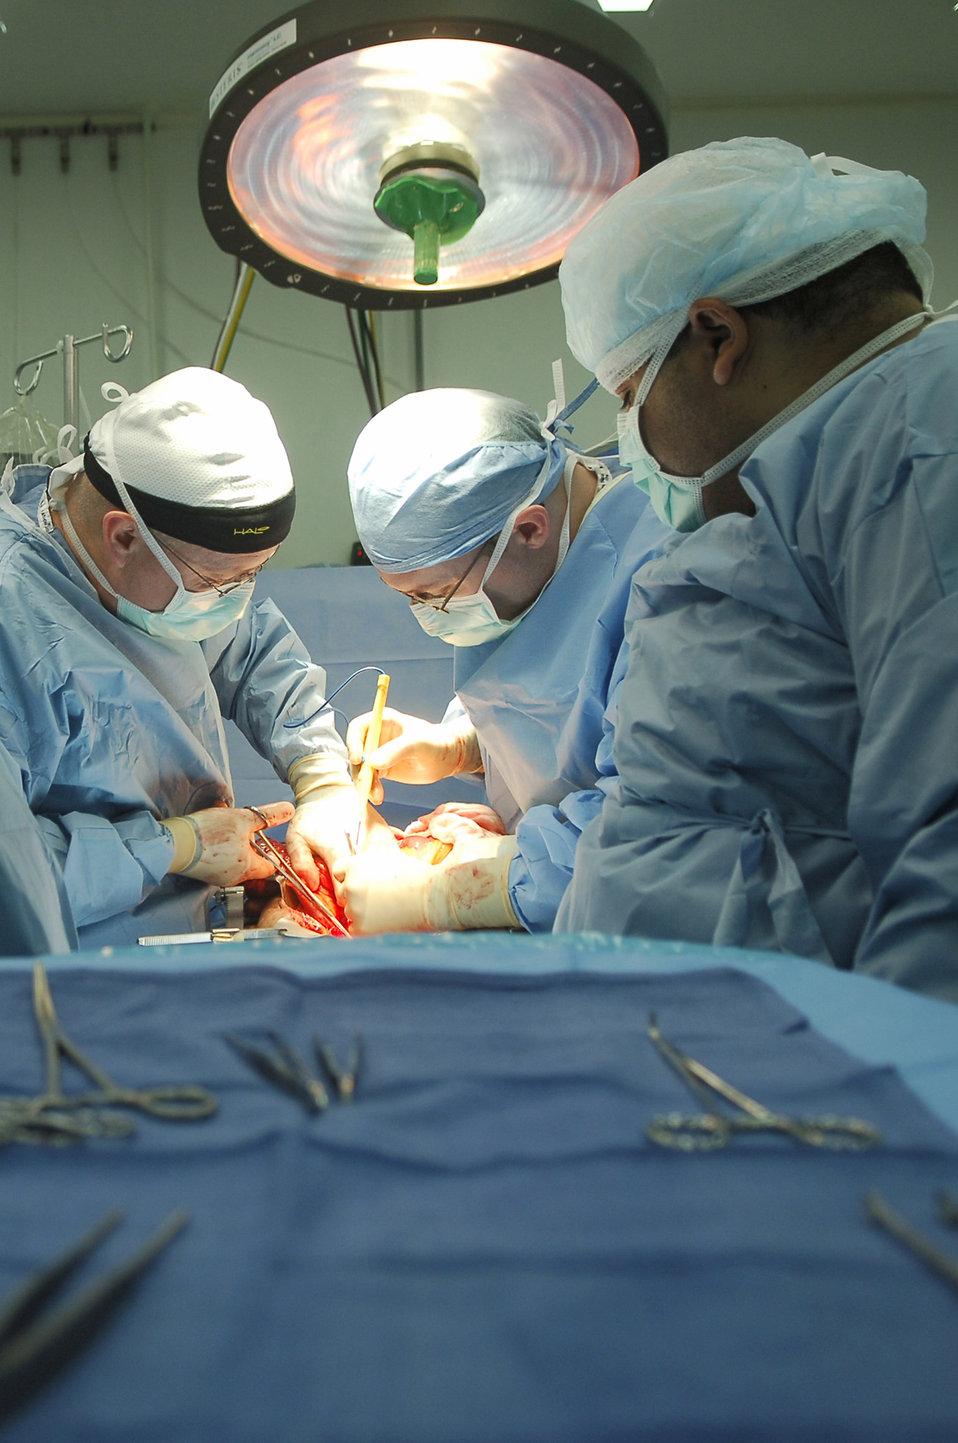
Balad trauma doctors gather to hone skills

Lt. Col. (Dr.) John Mansfield and Maj. (Dr.) Greg Hughes work together on a procedure to remove kidney stones from an Iraqi man March 26 at Balad Air Base, Iraq. The doctors met during the Joint Theater Trauma System conference where they learned how each other's medical facilities function. Colonel Mansfield is a 332nd Expeditionary Medical Operations Squadron urologist deployed from Royal Air Force Lakenheath, England and Major Hughes is a 332nd EMDOS surgeon and an Iraqi surgeon from Balad General Hospital deployed from Wright-Patterson Air Force Base, Ohio.